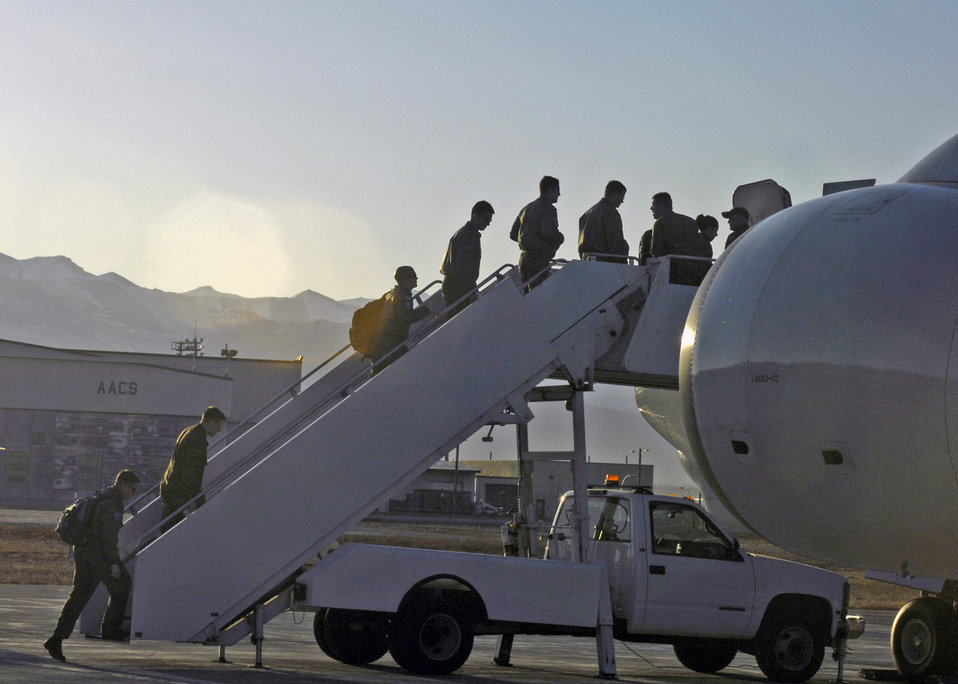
Red Flag-Alaska ends

NATO crewmembers board an E-3 Airborne Warning and Control System as they participate in Red Flag-Alaska 2009 May 1 at Elmendorf Air Force Base, Alaska. This exercise enabled flying squadrons to enhance their fighting capabilities in simulated combat sorties in a realistic threat environment. The 10-day exercise ended May 1.